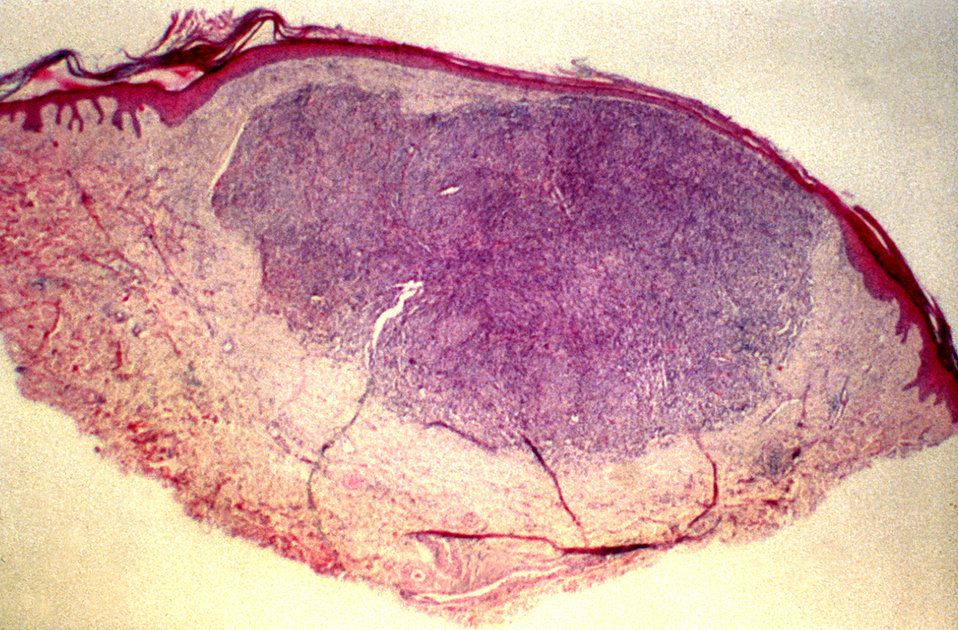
This low magnification micrograph of a skin biopsy depicts histopathologic changes indicative of Kaposi's sarcoma (KS).